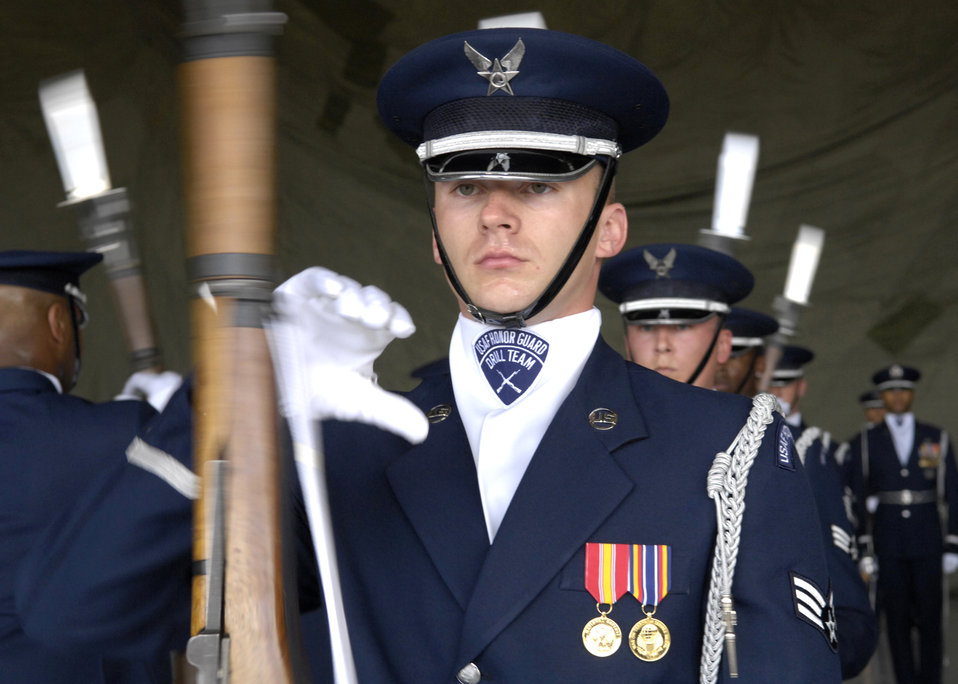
Showcasing the Air Force mission

Senior Airman Timothy Treadway, of the United States Air Force Honor Guard Drill Team, performs March 24 during the air show at Luke Air Force Base, Ariz. The drill team is the traveling component of the Air Force Honor Guard and tours Air Force bases worldwide showcasing the precision of today's Air Force to recruit, retain and inspire Airmen for the Air Force mission.